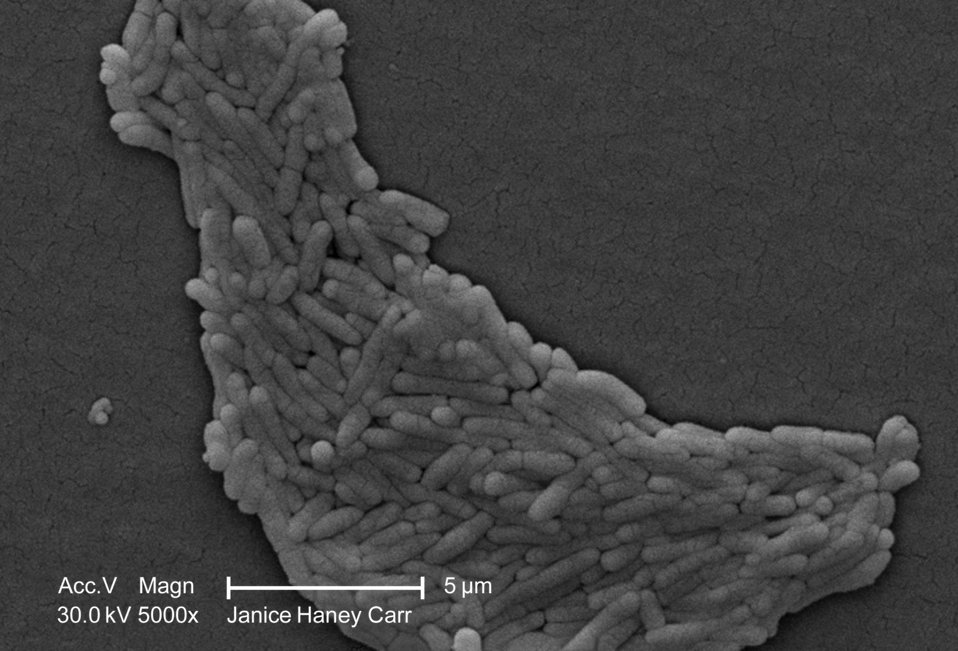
Under a moderately-high magnification of 5000X, this scanning electron micrograph (SEM) revealed the presence of a large grouping of Gram-negative Salmonella typhimurium bacteria, that had been isolated from a pure culture. See PHIL 10979 for a colorized version of this image.How do people catch Salmonella??